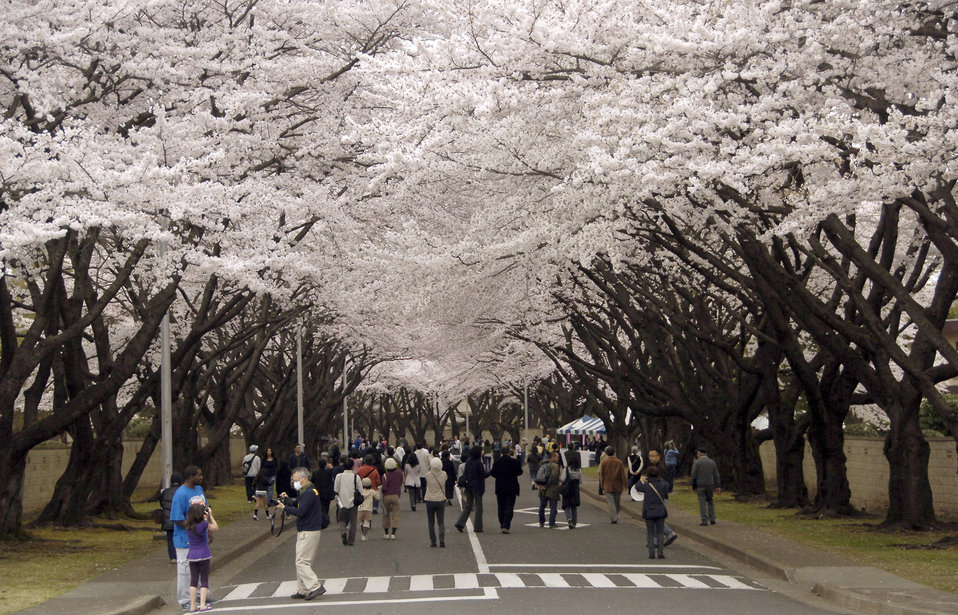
Cherry Blossom Festival at Yokota AB

Members from Yokota Air Base, Japan, and Japanese locals walk down McGuire Avenue during the Yokota Cherry Blossom Open House April 10, 2011. Base officials opened the gates to the public, allowing the local Japanese community to come on to Yokota to see the trees in full bloom. More than 1,300 local nationals attended the event.